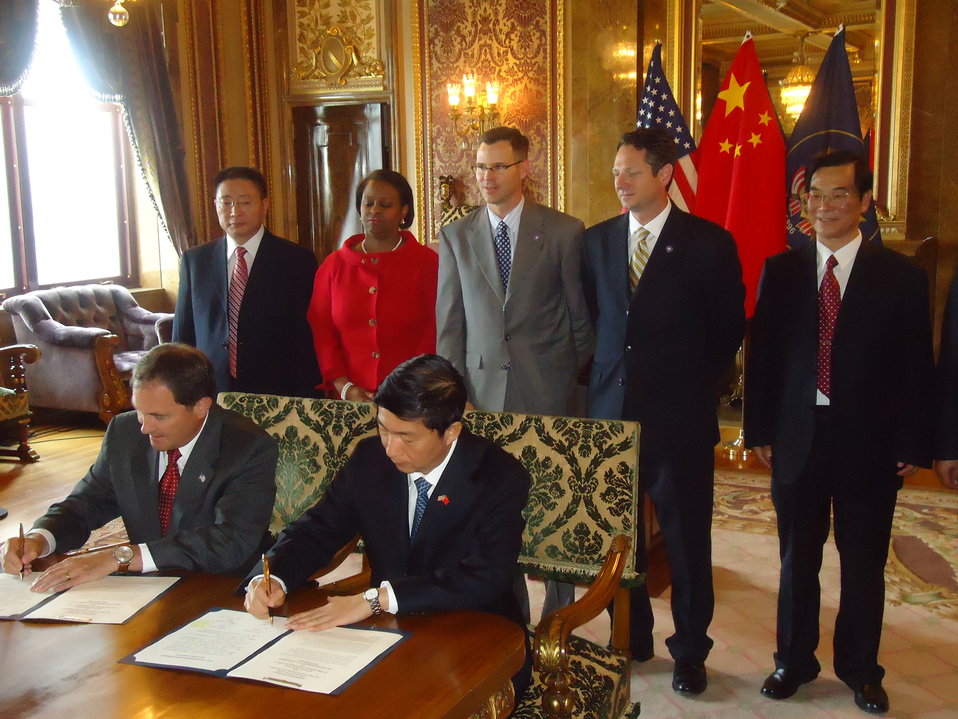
Special Representative Lewis Poses for a Photo With Utah Governor Herbert and Qinghai Governor Luo Huining

Special Representative for Global Intergovernmental Affairs Reta Jo Lewis, second from left in the back row, poses for a photo with Utah Governor Gary Herbert and Qinghai Governor Luo Huining at a Memorandum of Understanding signing at the U.S.-China Governors Forum in Salt Lake City, Utah, on July 13, 2011.